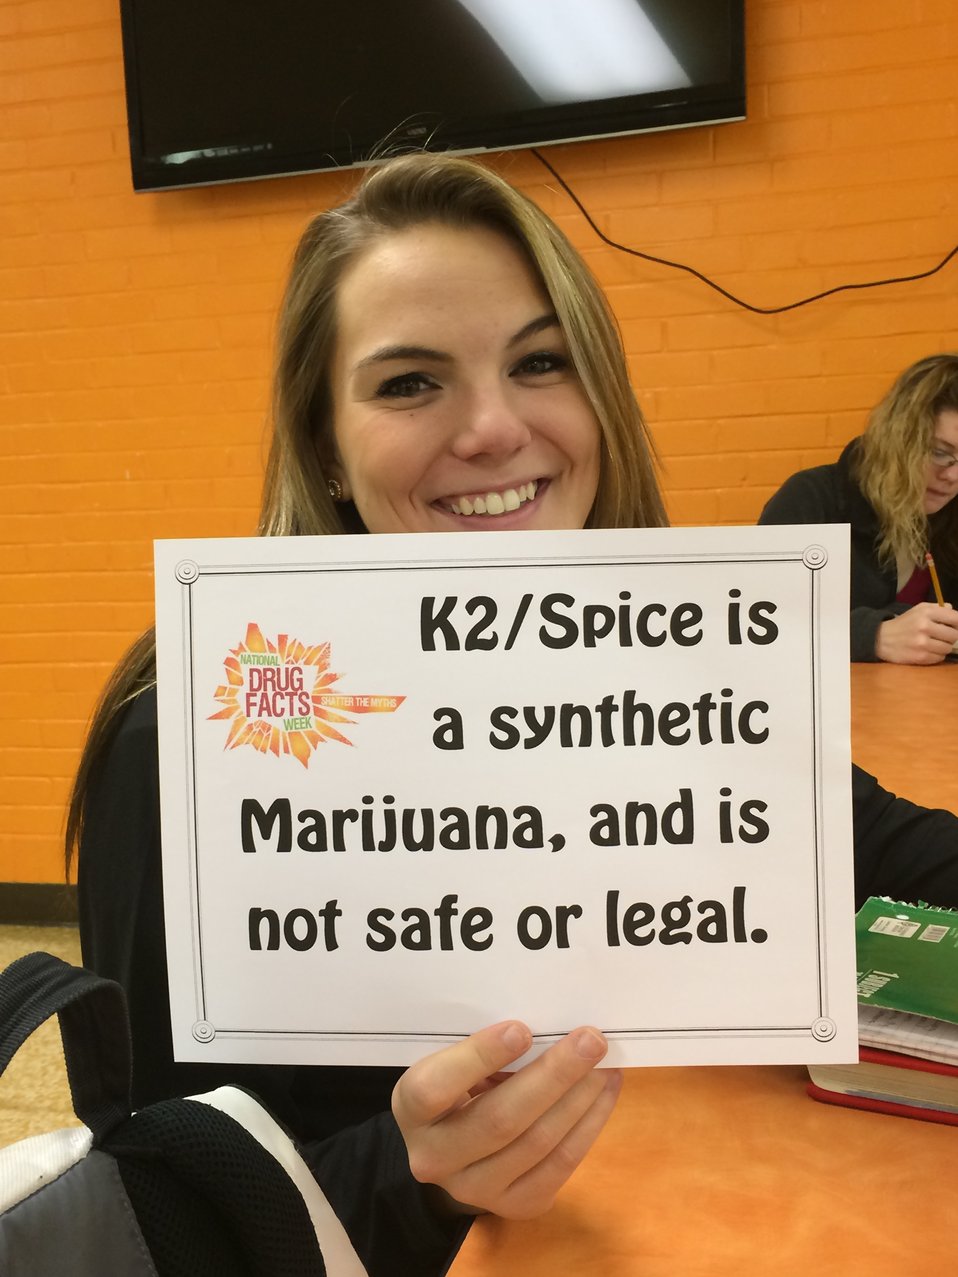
K2/Spice: NDFW Factoid

Teenagers from the Van Buren County SAFE Coalition's, Youth Leadership Council (YLC) in Keosauqua, Iowa participate in various events during National Drug Facts Week, 2014.